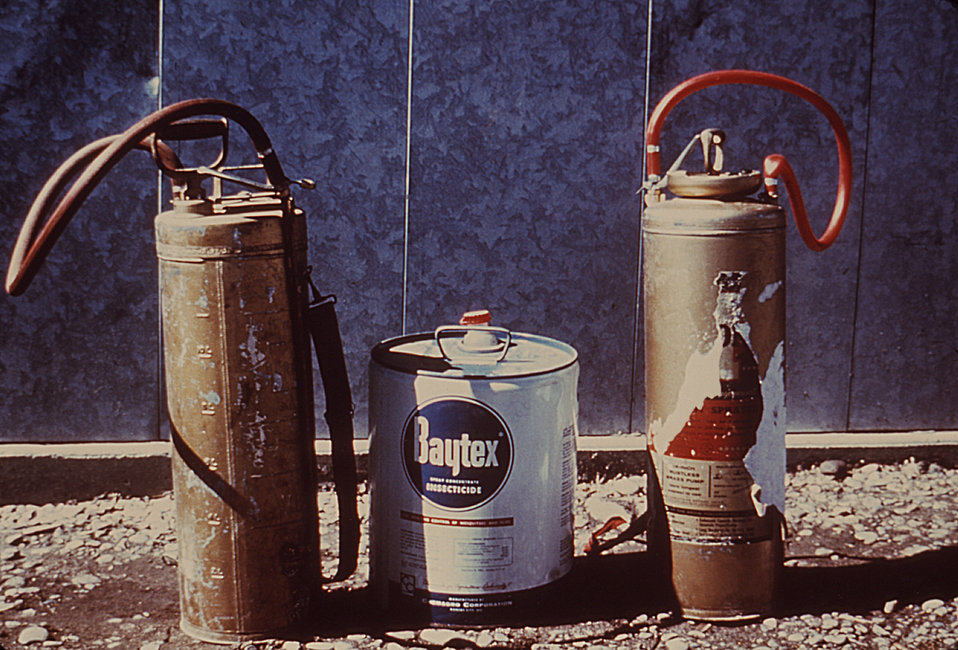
This 1981 photograph depicts some of the equipment used in the control of mosquito populations through the delivery of insecticides into mosquito-ridden environments.